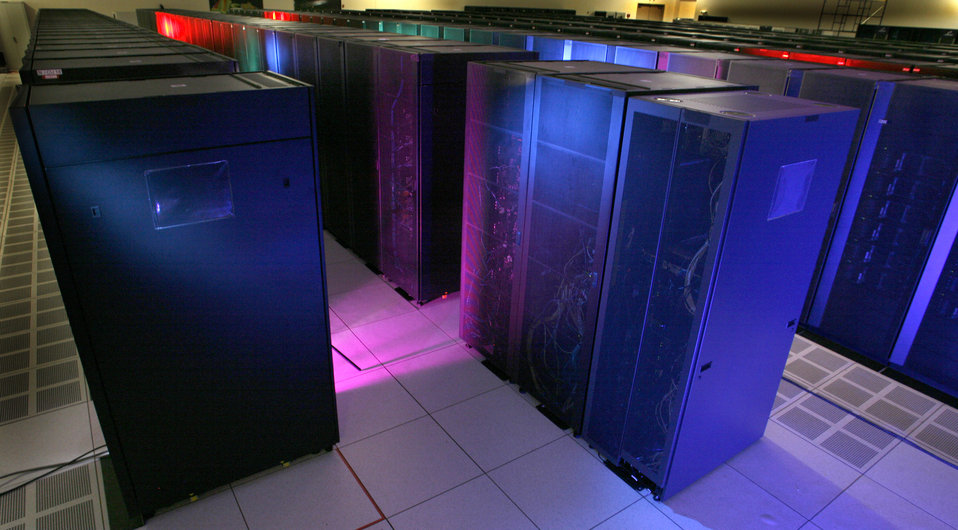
ROADRUNNER SUPERCOMPUTER AT LOS ALAMOS NATIONAL LABORATORY.

THE ROADRUNNER IS THE WORLD'S FIRST SUPERCOMPUTER TO ACHIEVE SUSTAINED OPERATING PERFORMANCE SPEEDS OF ONE PETAFLOP/S. OPERATING AT PETAFLOP/S PERFORMANCE MEANS THE MACHINE CAN PROCESS A MILLION BILLION CALCULATIONS EACH SECOND. IN PARTNERSHIP WITH LOS ALAMOS AND THE NATIONAL NUCLEAR SECURITY ADMINISTRATION, ROADRUNNER WAS BUILT BY IBM AND WILL BE HOUSED AT LANL, WHERE IT WILL BE USED TO PERFORM CALCULATIONS THAT WILL VASTLY IMPROVE THE NATION'S ABILITY TO CERTIFY THAT THE UNITED STATES NUCLEAR WEAPONS STOCKPILE IS RELIABLE WITHOUT CONDUCTING UNDERGROUND NUCLEAR TESTS. IT WILL ALSO BE USED TO SCIENCE AND ENGINEERING SUCH AS ENERGY RESEARCH, UNDERSTANDING COMPLEX NEURAL AND BIOLOGICAL SYSTEMS, AND BIOMEDICAL APPLICATIONS. ROADRUNNER WAS BUILT USING COMMERCIALLY AVAILABLE HARDWARE, INCLUDING ASPECTS OF COMMERICAL GAME CONSOLE TECHNOLOGIES.